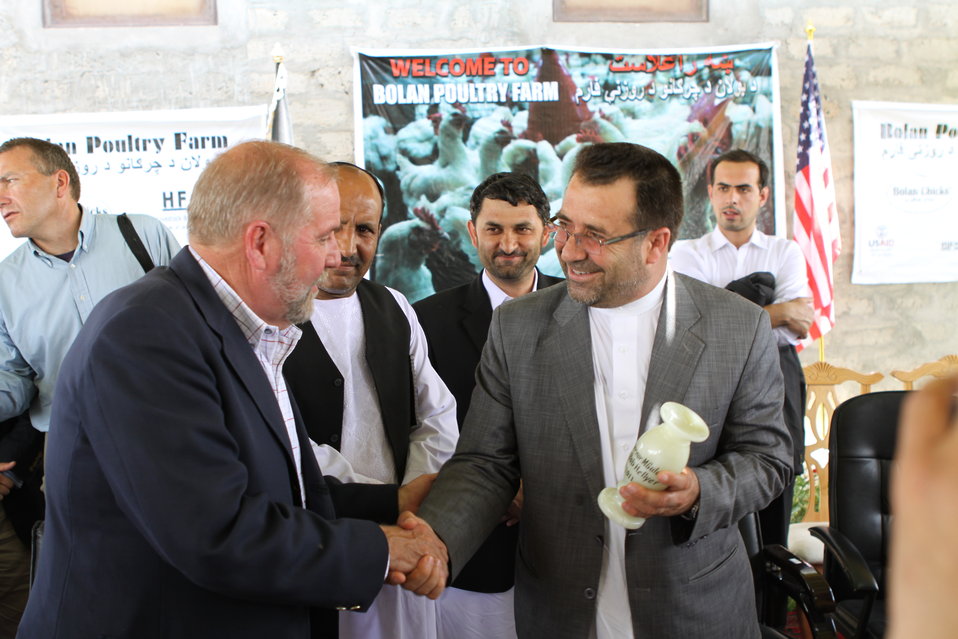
Bolan Poultry Farm